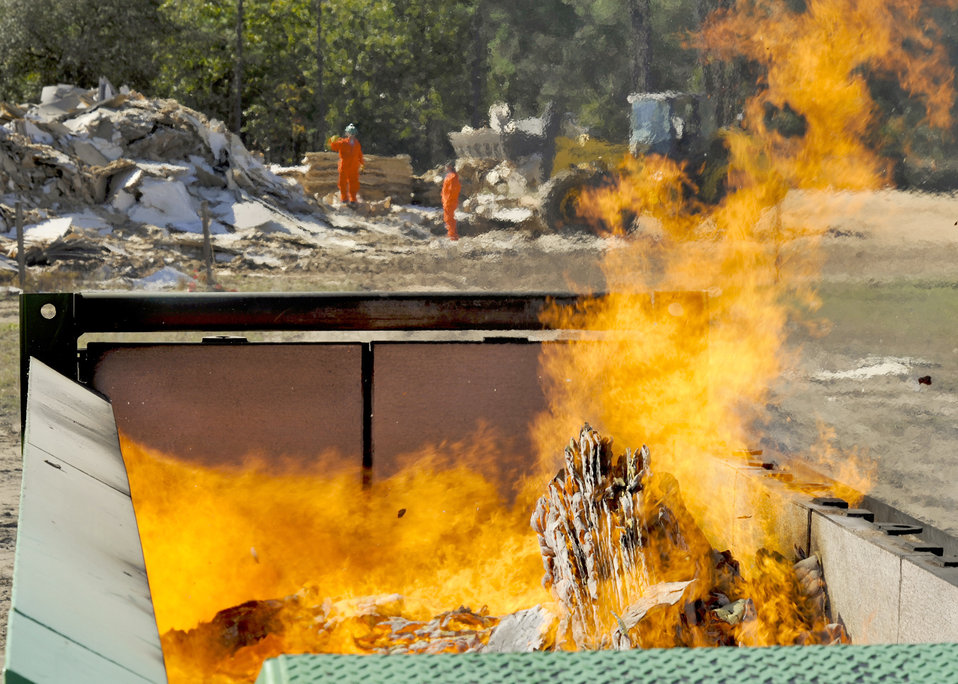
Air burners at Eglin

Workers from InDyne watch as particle board waste burns in the 46th Test Wing's new air curtain incinerator Oct. 31, 2010, at Eglin Air Force Base, Fla.